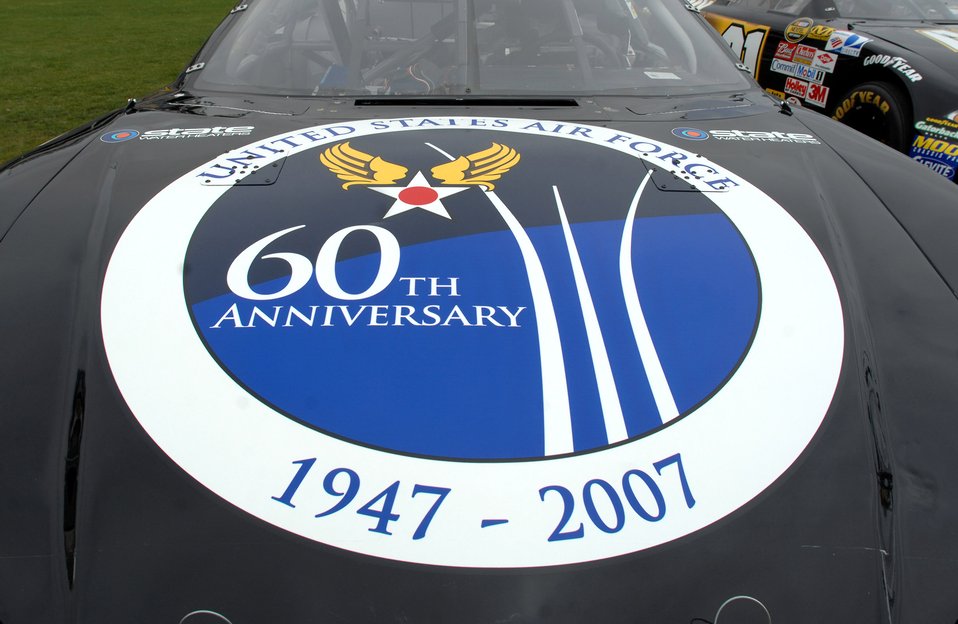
NASCAR salutes Air Force

The U.S. Air Force 60th anniversary logo is unveiled on the hood of NASCAR driver Ward Burton's State Water Heaters car during an unveiling ceremony May 8 at Lowe's Motor Speedway in Charlotte, N.C. The unveiling was in recognition of